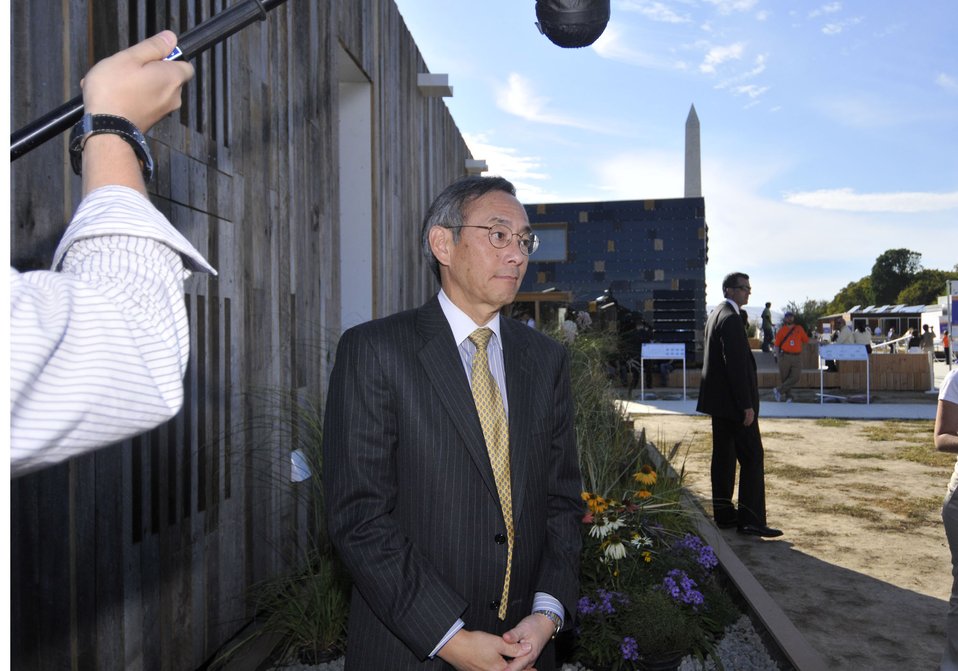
Solar Decathlon 2009 on the National Mall, with Sec. Chu

Solar Decathlon 09